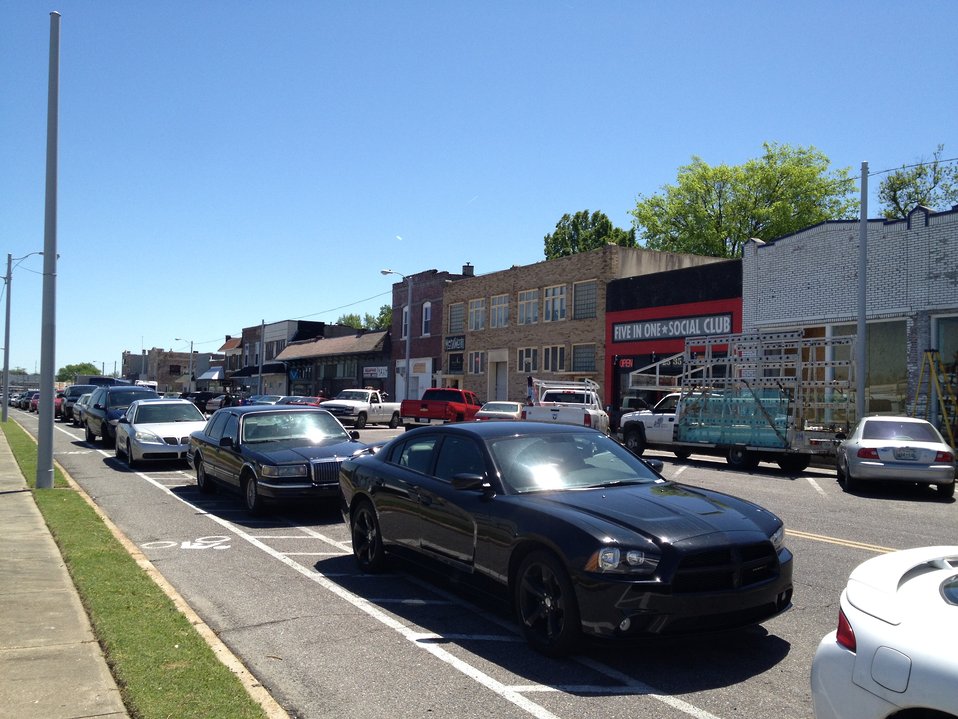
Broad Ave Bike Lane in Memphis

We’ll be helping #Memphis conduct a #CompleteStreets workshop to make streets safer for bicyclists, drivers and pedestrians. #BikeToWork